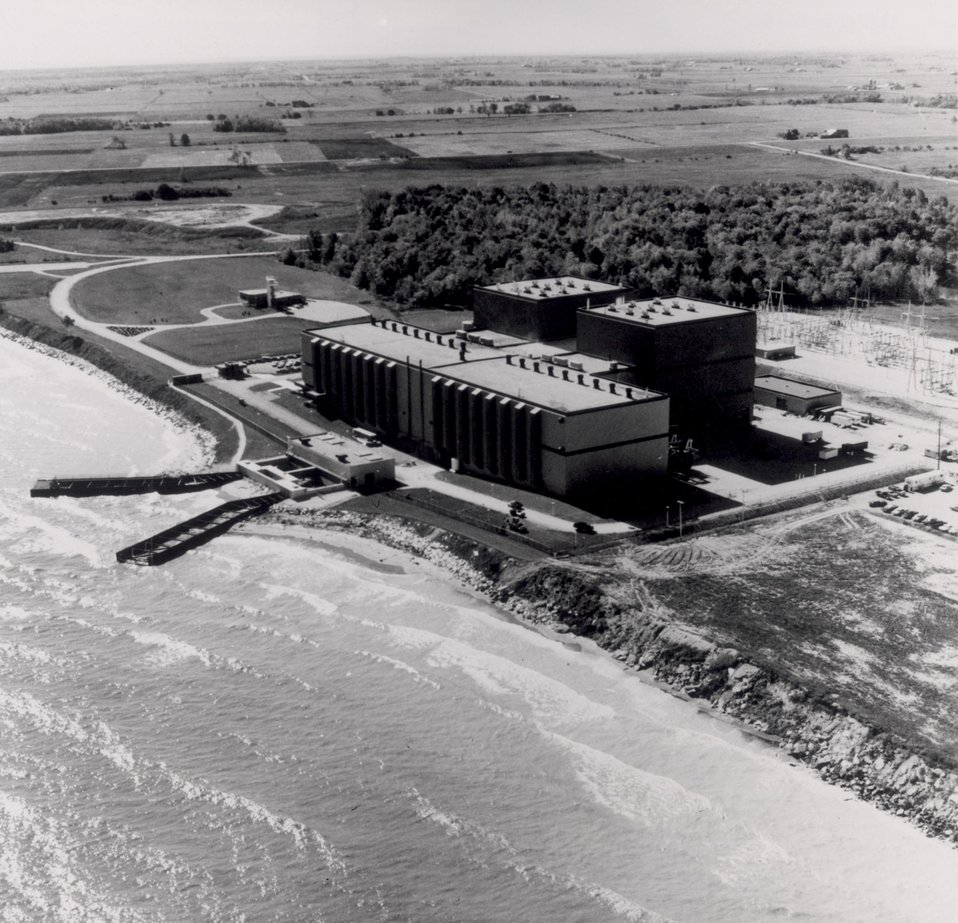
POINT BEACH NUCLEAR PLANT UNITS 1& 2...is operated by Wisconsin Electric Power Co. and Wisconsin Michigan Power Co. Circa 1973.